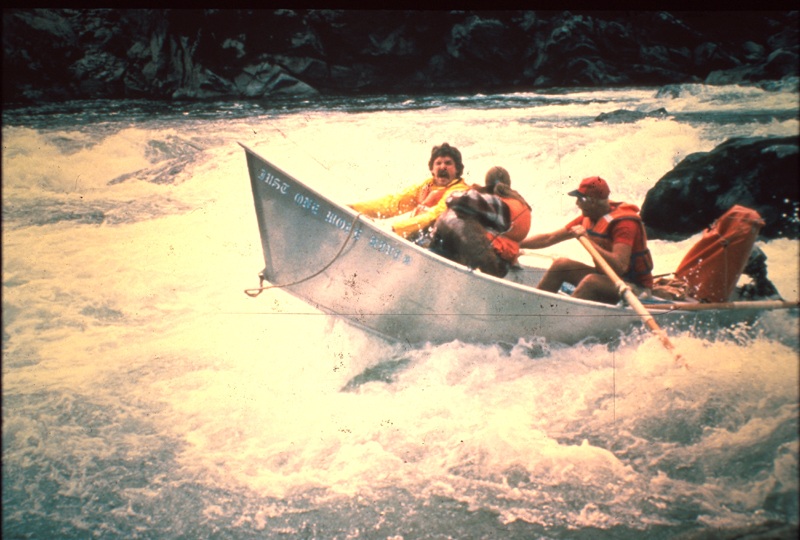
Dory Lower Salmon River Cottonwood Field Office UCSC Upper Columbia-Salmon Clearwater District